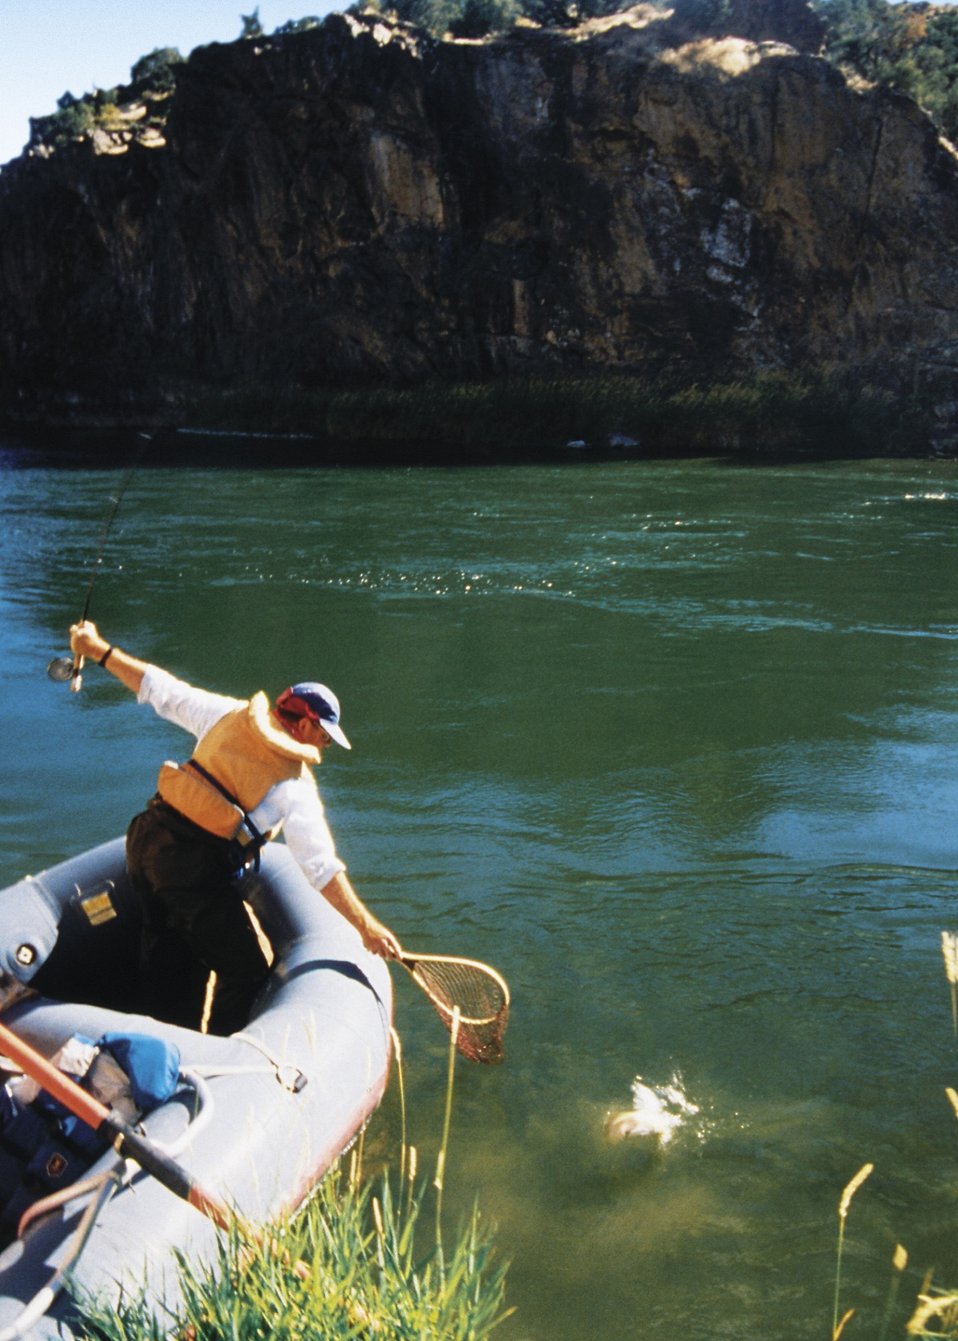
Catching fish from river